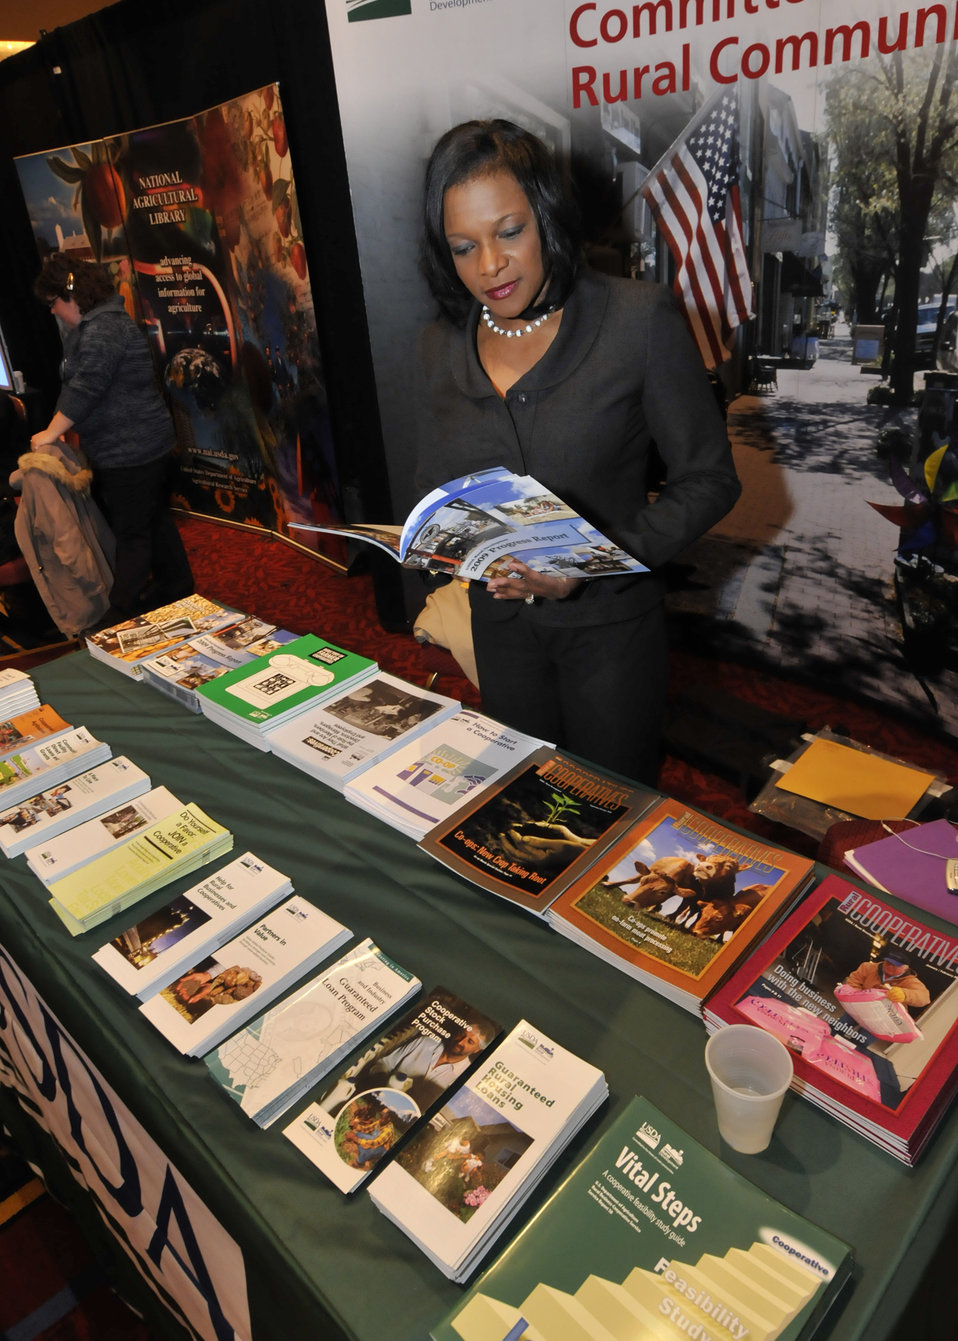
USDA exhibitors at the World Agricultural Outlook Board (WAOB) Forum in the Exhibit Hall of the Crystal City Marriott in Arlington, VA, on Thursday, February 24, 2011.